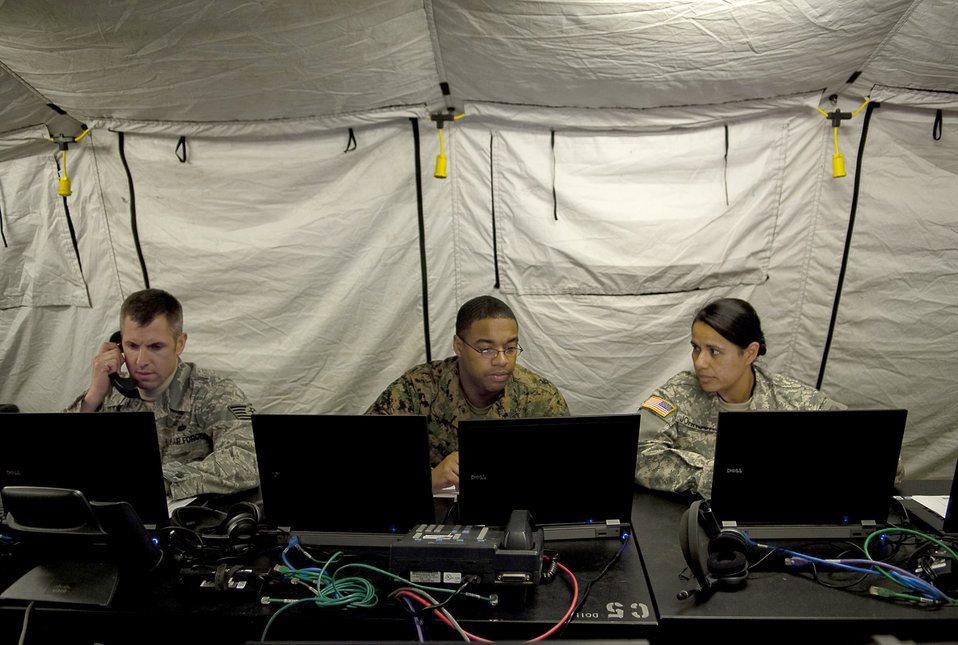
DJC2 system provides communications support for JSF, USFJ

(From left) Tech. Sgt Davis Way, Marine Sgt. Terrall Miller, and Army Spc. Sonya Johnson work on the communicators equipment April 1, 2011, in the Deployable Joint Command and Control System at Yokota Air Base, Japan. The DJC2 is deployed to Yokota AB to provide communications in support of Operation Tomodachi. All service members are assigned to the Joint Communication Support Element.